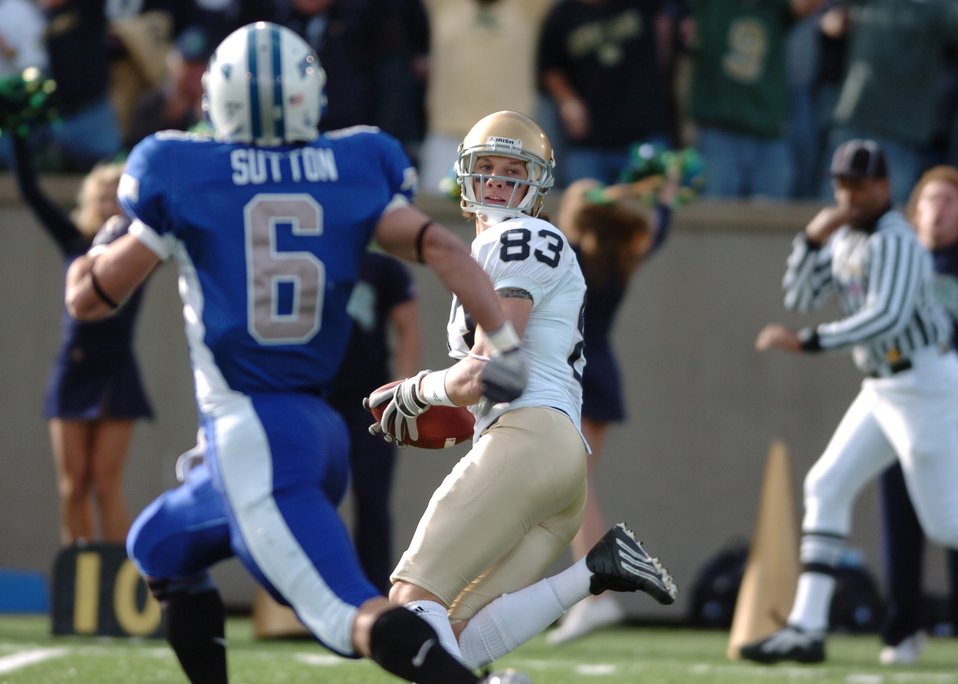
Irish Score

Notre Dame wide receiver Jeff Samardzija catches a 51-yard touchdown pass from quarterback Brady Quinn on the second play of the game at Air Force Saturday. Quinn threw for four touchdowns on the day as the 8th-ranked Irish cruised to victory, 39-17.